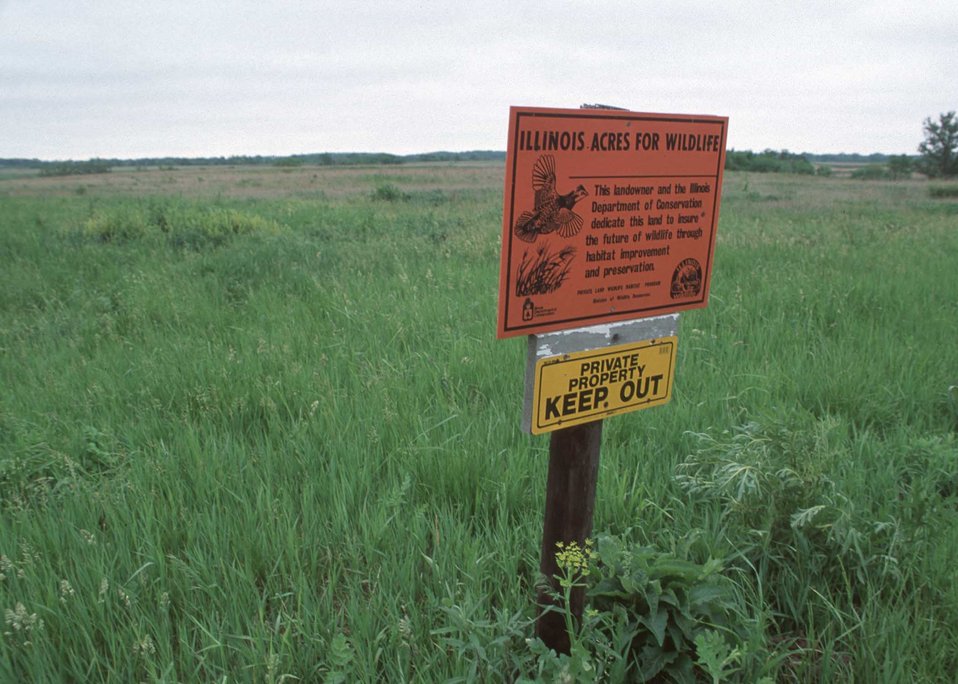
This Peoria County, Illinois farm participates in many conservation programs. They use NRCS programs and technical assistance as well as State programs that improve habitat for wildlife.